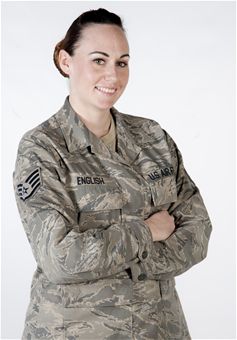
Pin-up for the troops

Staff Sgt. Destini English, 99th Medical Operations Squadron mental health technician, poses during a photo shoot at Nellis Air Force Base, Nev., Aug. 17, 2012. Hailing from Fort Hood, Texas, English has been in the Air Force for five and a half years and is heavily involved in charities such as Pin-Ups for Vets and the Tragedy Assistance Program for Survivors.